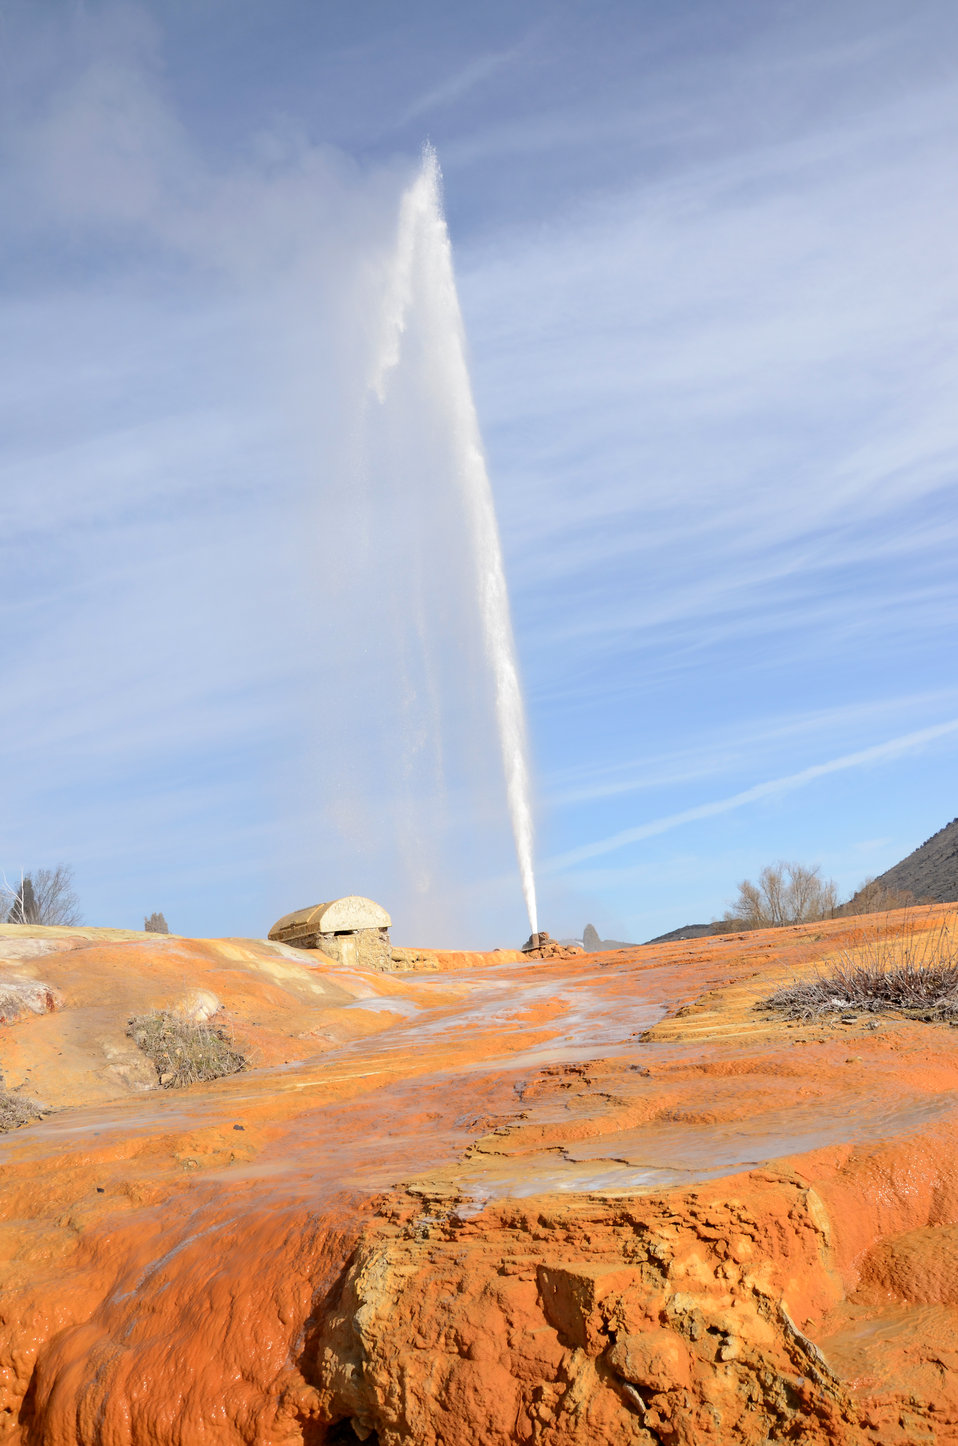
A large, naturally occurring CO2 storage system at Soda Springs, Idaho offers an excellent study system to both Idaho National Laboratory and other researchers.